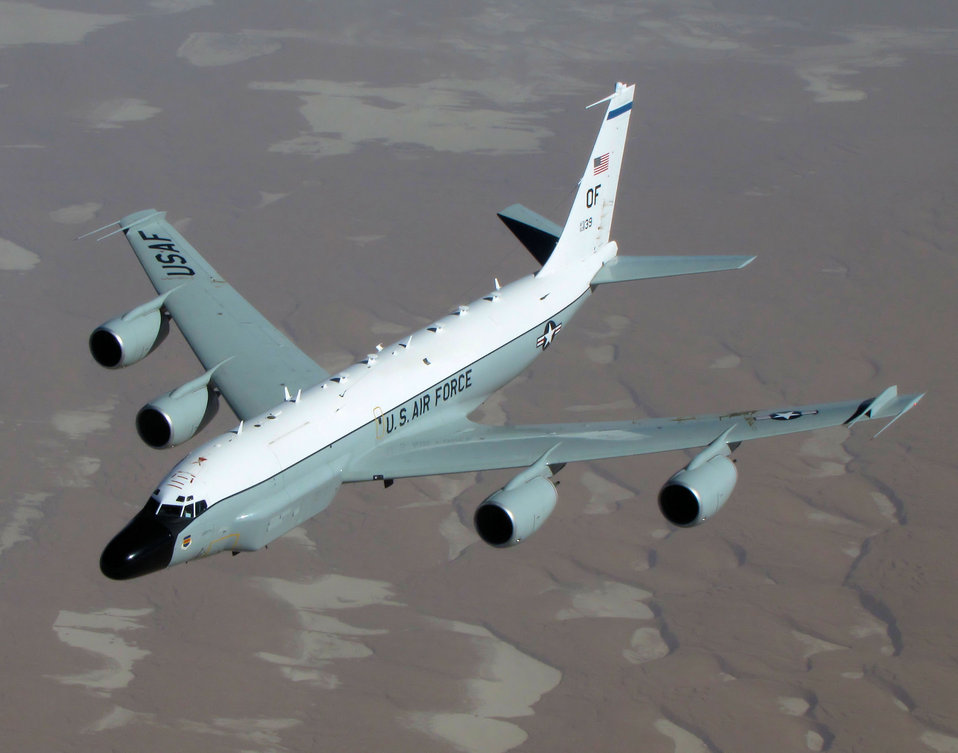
RC-135V/W Rivet Joint

The RC-135V/W Rivet Joint reconnaissance aircraft supports theater and national level consumers with near real time on-scene intelligence collection, analysis and dissemination capabilities.